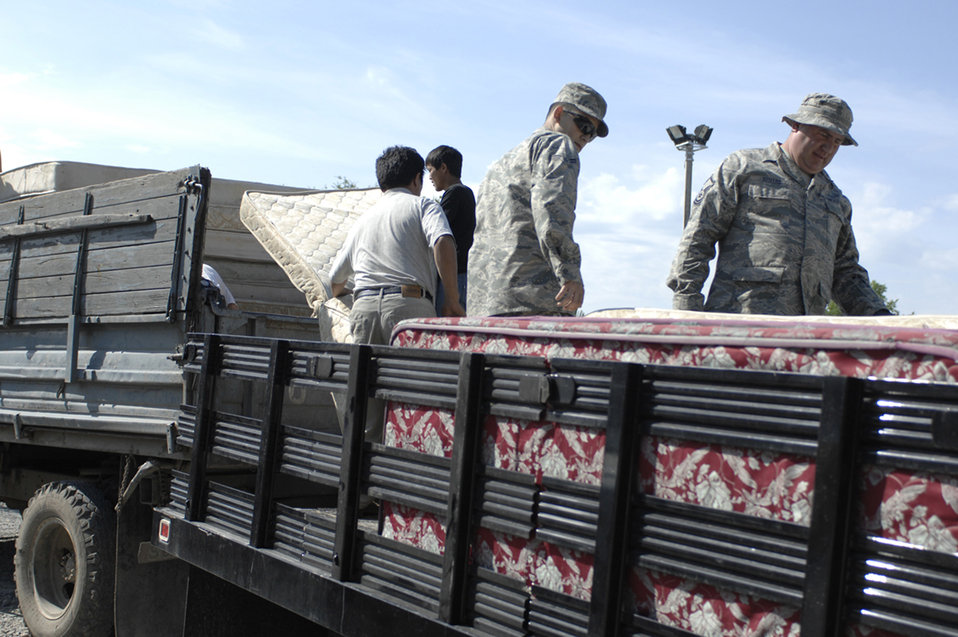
Airmen donate mattresses to help community

Airman 1st Class Javier Pedroza and Master Sgt. Leslie Stivers help transfer mattresses to a community and humanitarian assistance program at Manas Air Base, Kyrgyzstan, June 10. A collaborative effort from the base, the U.S. Embassy, the Kyrgyz Embassy, Department of State, Counterpart International Inc. and the Defense Logistics Agency allowed more than 300 mattresses to be donated to six hospitals in nearby capitol of Bishkek. Airman Pedroza is a fitness center quality assurance apprentice, assigned to the 376th Expeditionary Force Support Squadron. Sergeant Stivers is an utility team crew chief with the 376th Expeditionary Force Support Squadron.